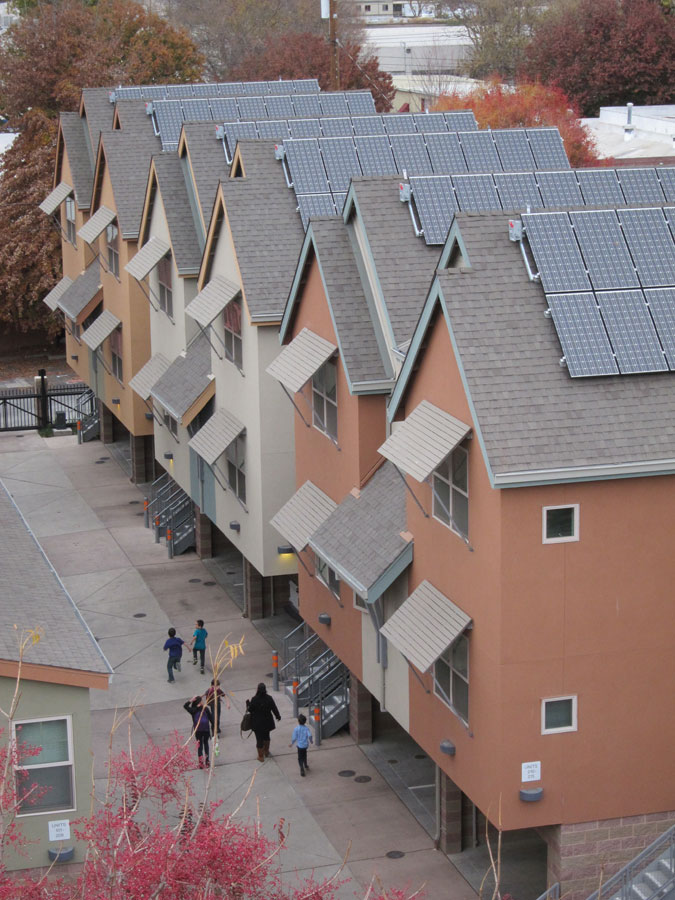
Sacramento IMG 7037 La-Valentina

La Valentina and La Valentina North are 100-percent affordable, mixed-use buildings next to a light-rail stop in Sacramento, California. Energy-efficient features integrated into the buildings, such as awnings that shade windows, lower costs and reduce energy consumption. La Valentina is the winner of EPA’s 2013 National Award for Smart Growth Achievement in the category of Built Projects. The award is given annually for creative, sustainable initiatives that better protect the health and the environment of our communities while strengthening local economies. In 2013, EPA recognized innovative projects in seven communities.